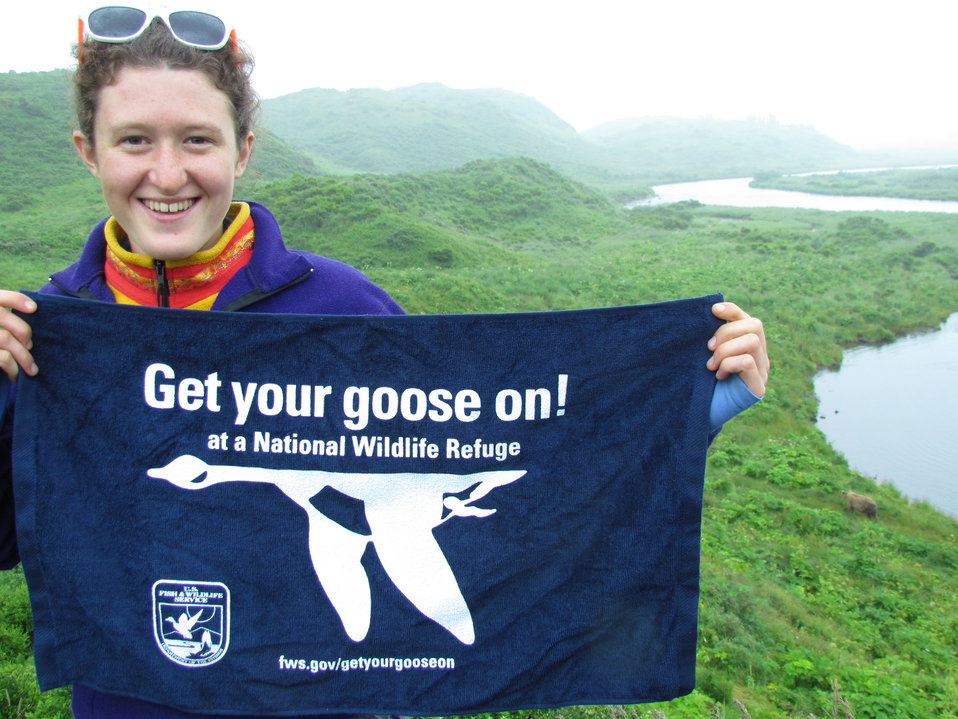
Get Your Goose On! - Alaska Style

YCC crew member, Iris Blakeslee, with Kodiak Brown Bears in the background.

Credit: Shelly Lawson / USFWS

The Kodiak National Wildlife Refuge is a United States National Wildlife Refuge in the Kodiak Archipelago in southwestern Alaska, United States.

The Kodiak National Wildlife Refuge includes the southwestern two-thirds of Kodiak Island, Uganik Island, the Red Peaks area of Afognak Island and all of Ban Island in the archipelago. It encompasses 1,990,418 acres (8,054.94 km2).[2] The refuge is administered from offices in Kodiak.

The refuge contains seven major rivers and about 100 streams. It is a spawning ground for all six species of Pacific Ocean salmon, trout and several other fish species, as well as a nesting ground for 250 species of bird, many of which feed on salmon. The refuge has only six native species of mammals: Kodiak brown bear, red fox, river otter, ermine, little brown bat and tundra vole. The non-native mammals Sitka deer, mountain goat, Roosevelt elk, snowshoe hare and beaver were introduced to the archipelago between the 1920s and 1950s and are now hunted and trapped.

The climate of the refuge is that of southern Alaska, mild and rainy. Many areas in the refuge are densely forested with Sitka Spruce at lower elevations. There are grasslands in drier areas and at higher elevations. The refuge contains several small glaciers.